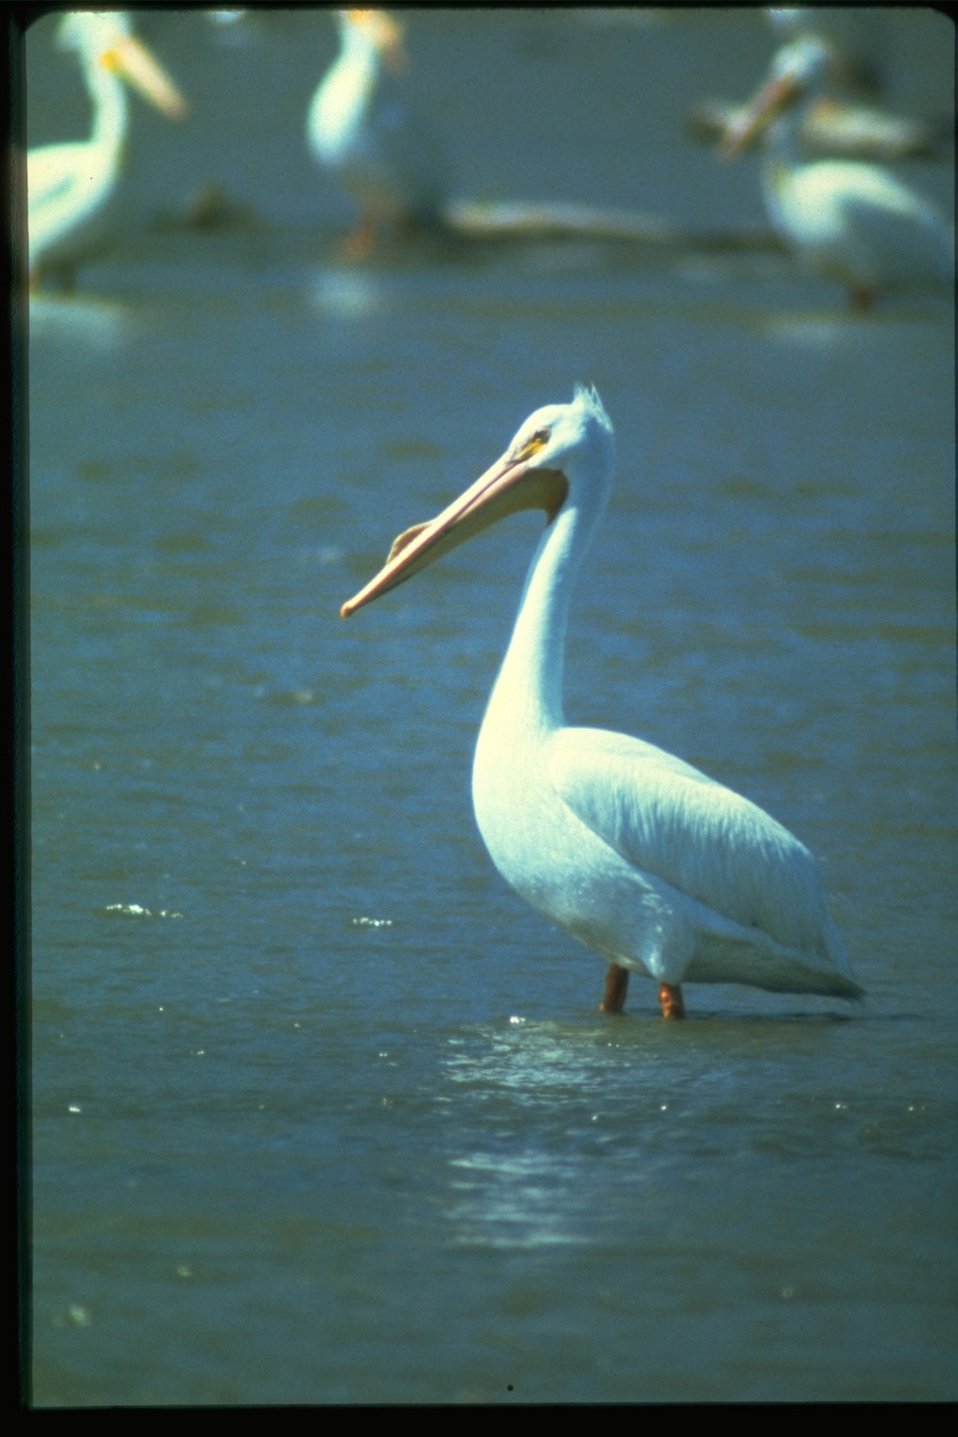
A white Pelican standing in water.